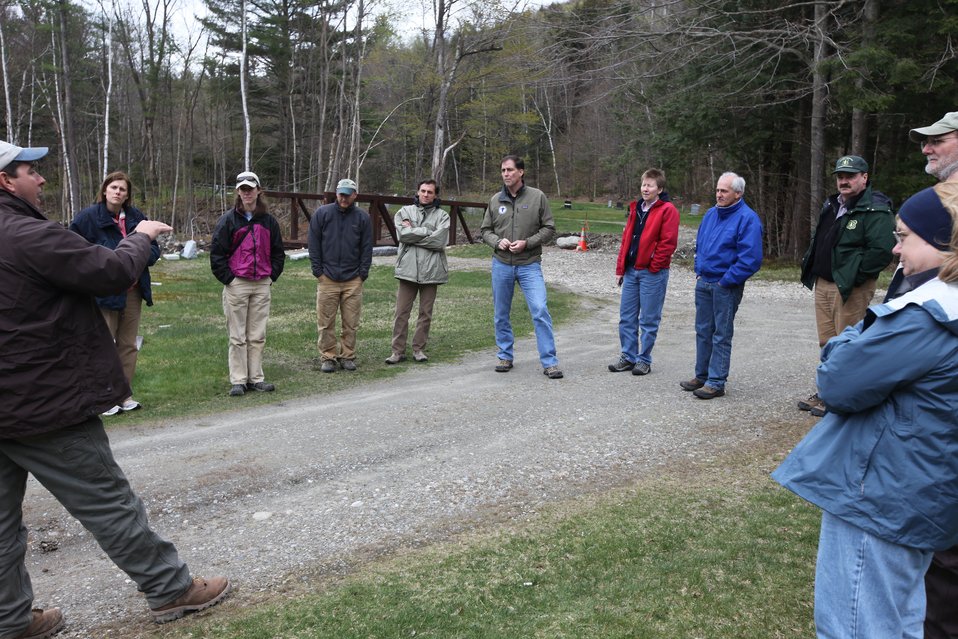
Chris Smith from USFWS Partners program with Dan Ashe and group at partner restoration site in Rochester, Vermont

U.S. Fish & Wildlife Service Director Dan Ashe visits the Northeast Region
for a tour of the White River National Fish Hatchery in Bethel, Vermont on
April 27, 2012. The hatchery was devastated by Tropical Storm Irene and
Dan Ashe had the chance to meet and thank the staff for their heroic work.
Director Ashe also visited restoration/flood response/fish passage project
sites in Rochester, Vermont and met with local officials and staff from the
White River Partnership.